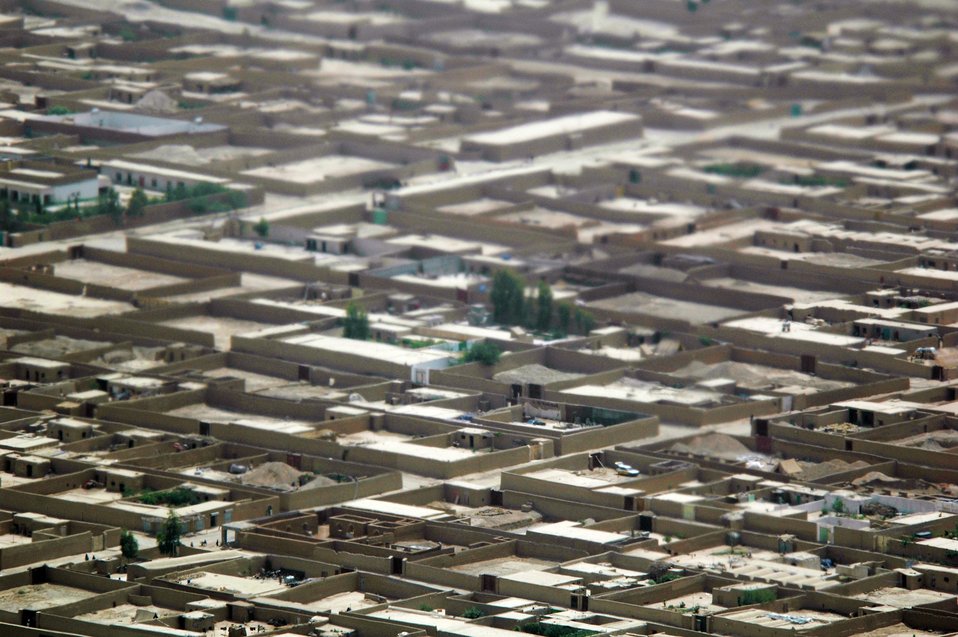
CODEL Berman